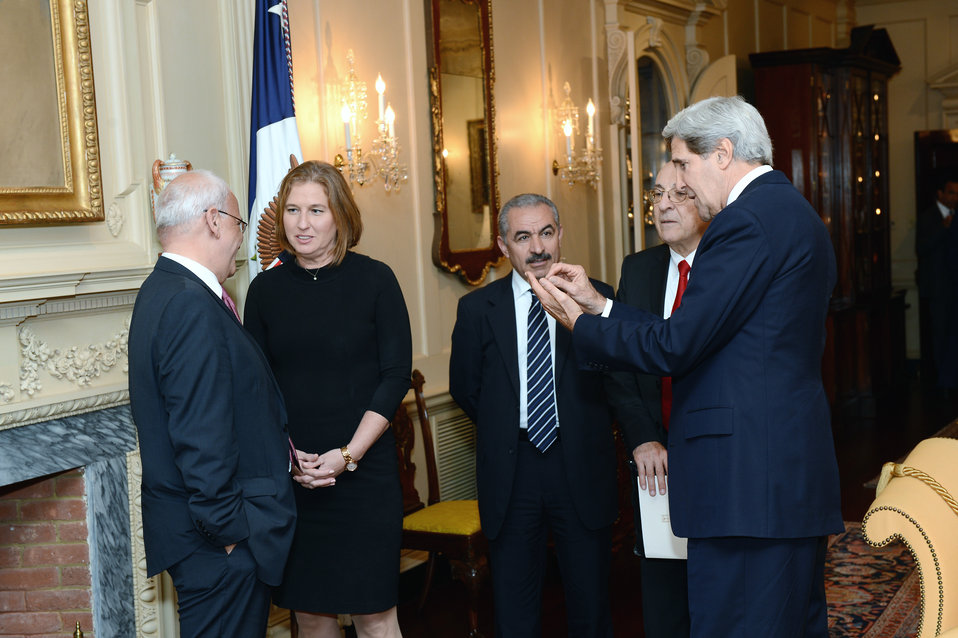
Secretary Kerry Hosts an Iftar for the Israeli Justice Minister Livni and Palestinian Chief Negotiator Erekat

U.S. Secretary of State John Kerry hosts an Iftar for Israeli Justice Minister Tzipi Livni and Palestinian Chief Negotiator Saeb Erekat at the U.S. Department of State in Washington, D.C., on July 29, 2013.